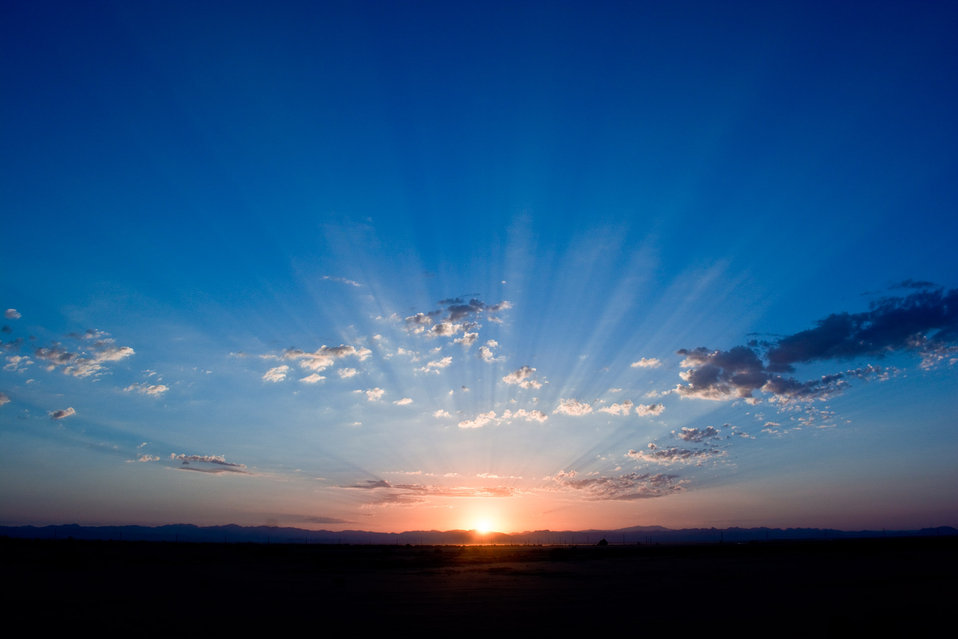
Sunrise

An Arizona sunrise.